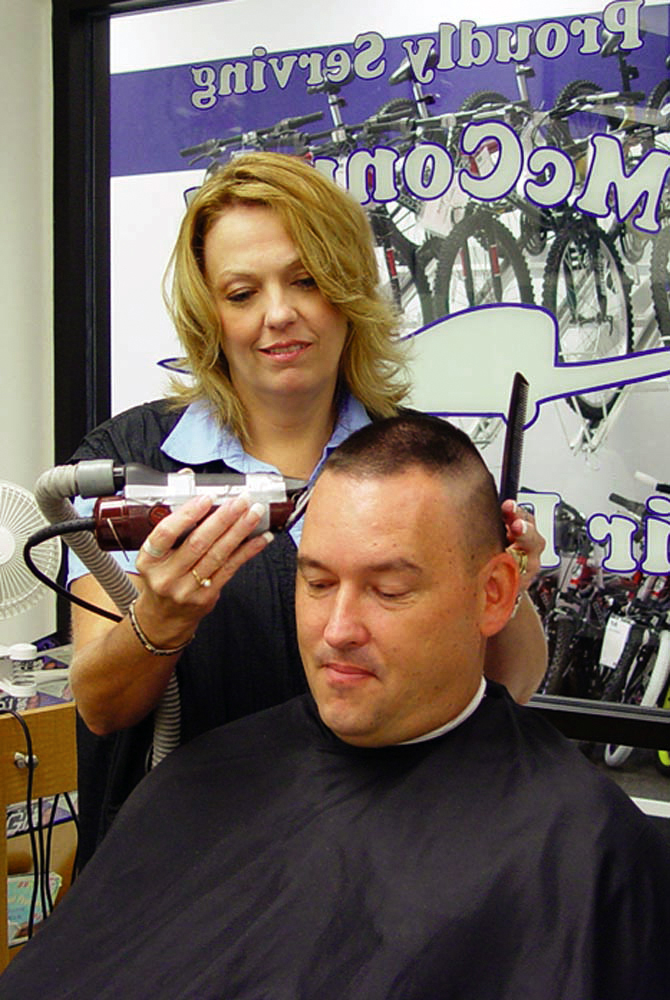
Friendship stands strong when duty calls

MCCONNELL AIR FORCE BASE, Kan. -- Robin Lawley, cuts Charles Smith's hair. Mrs. Lawley is the McConnell Base Exchange barber shop manager, and Mr. Smith is the 22nd Security Forces Squadron information and industrial security manager. Mr. Smith will provide a liver donation to Mrs. Lawley in August.